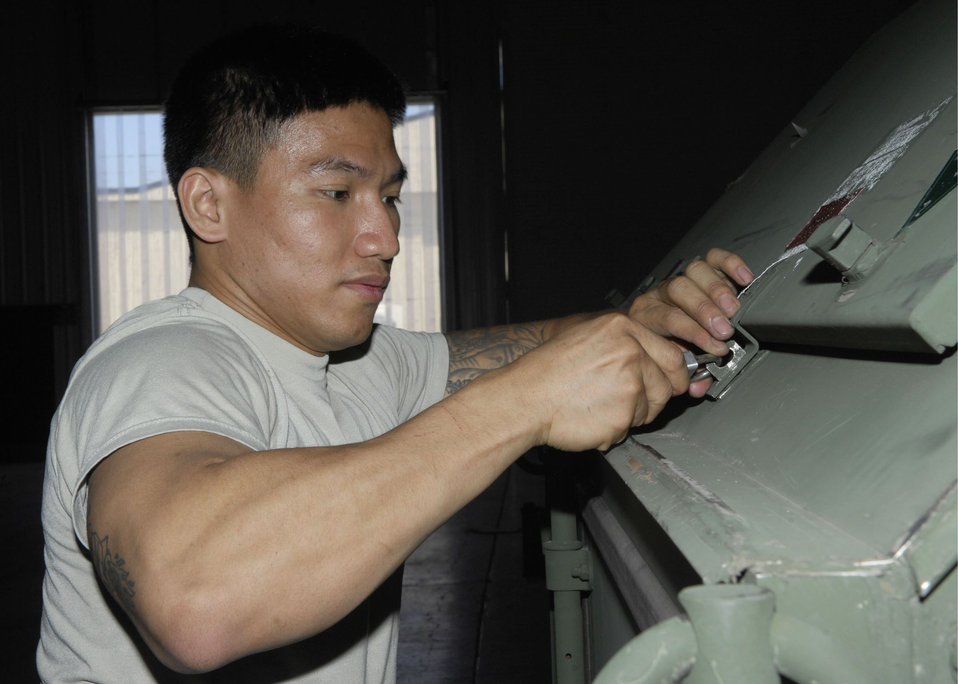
B-52s head to Guam.

Senior Airman Mark Galvan ensures that supplies are securely locked May 26, 2010, at Minot Air Force Base, N.D. The containers are filled with supplies and equipment 5th Bomb Wing deployers will need to support the U.S. Pacific Command's mission at Andersen Air Force Base, Guam. Airman Galvan is a 5th Operations Support Squadron aircrew flight equipment technician.